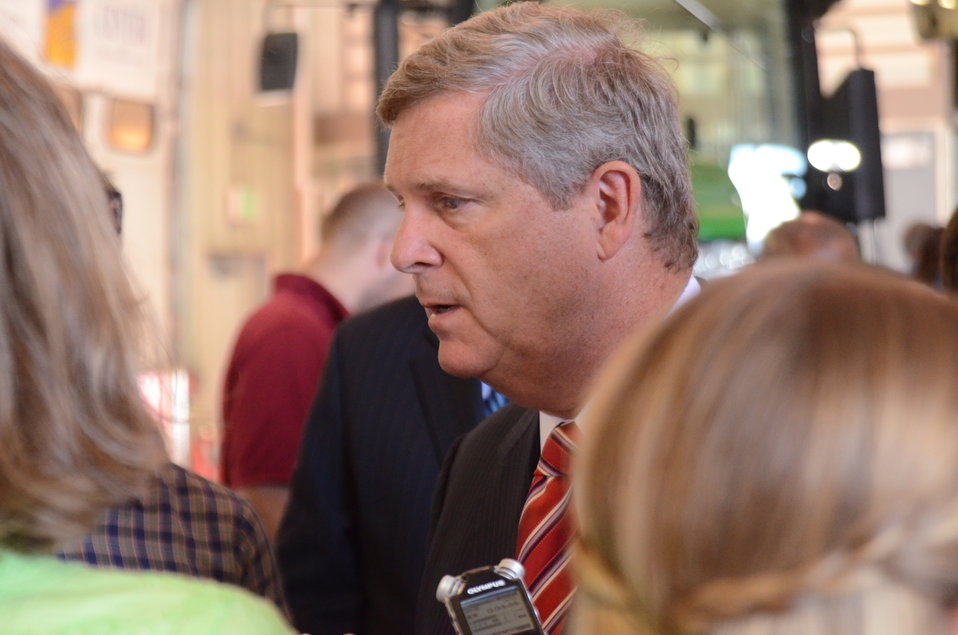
Agriculture Secretary and chair of the White House Rural Council Tom Vilsack at the Northeast Iowa Community College, IA, prior to the White House Rural Economic Forum, on Tuesday, Aug. 16, 2011.